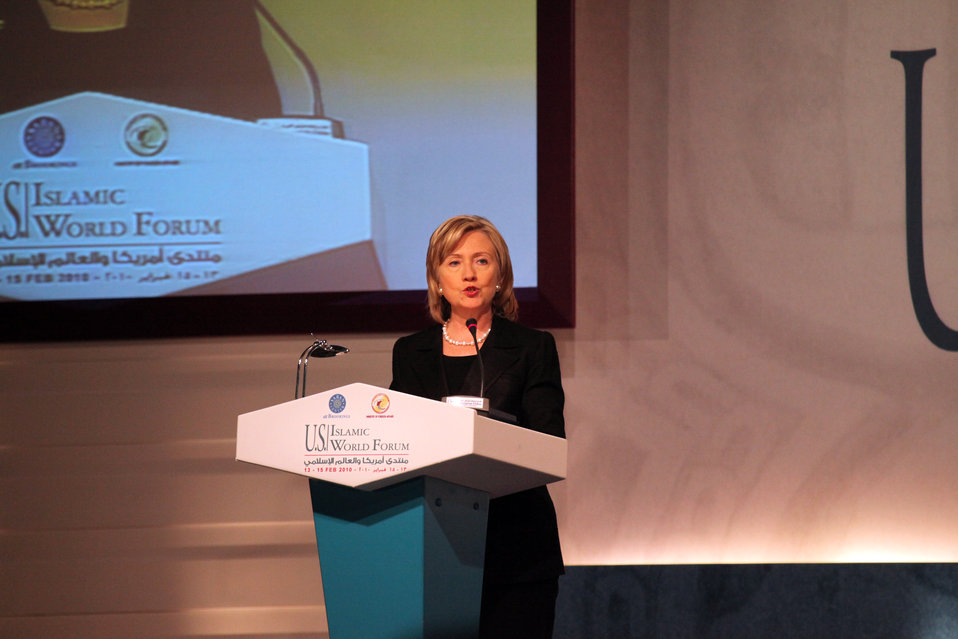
Secretary Clinton Travels to Qatar and Saudi Arabia

U.S. Secretary of State Hillary Rodham Clinton delivers remarks at the U.S. Islamic World Forum in Doha, Qatar February 14, 2010.